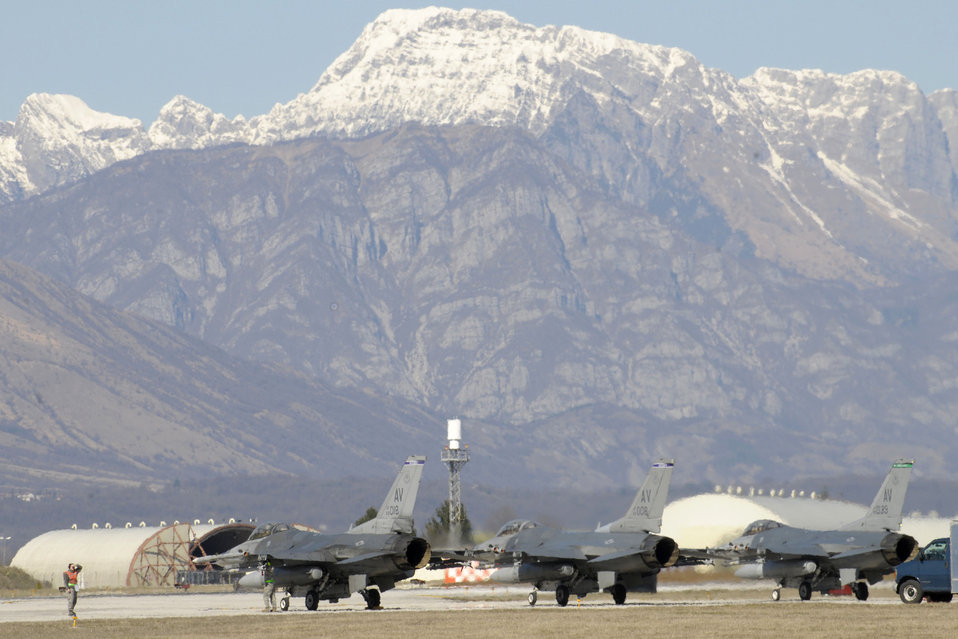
Odyssey Dawn

U.S. Air Force F-16 Fighting Falcons return to Aviano Air Base, Italy, after supporting Operation Odyssey Dawn on March 20, 2011. Joint Task Force Odyssey Dawn is the U.S. Africa Command task force established to support the larger international response to the unrest in Libya. A broad coalition of nations are partnering to enforce U.N. Security Council Resolution (UNSCR) 1973, which authorizes all necessary means to protect civilians in Libya under threat of attack by Qadhafi regime forces. JTF Odyssey Dawn is commanded by Admiral Samuel J. Locklear, III.